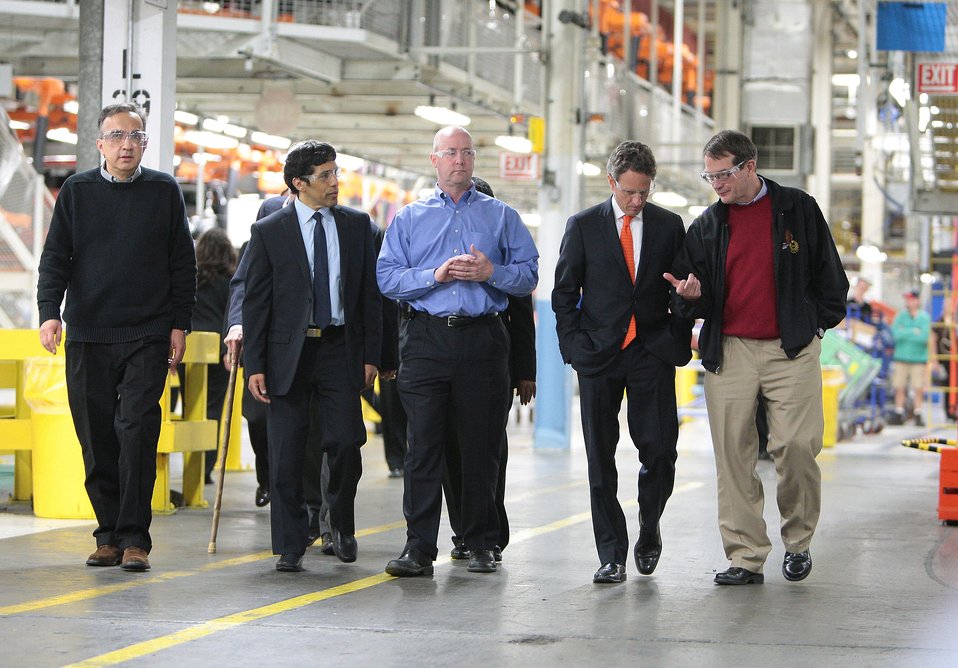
Secretary Geithner Visits Detroit

Chrysler Group CEO Sergio Marchionne (left-right), Congressman Hansen Clarke (MI-13), Plant Manager Pat Walsh, Secretary Tim Geithner, and UAW President Bob King on a tour of Jefferson North Assembly Plant (JNAP) in Detroit.